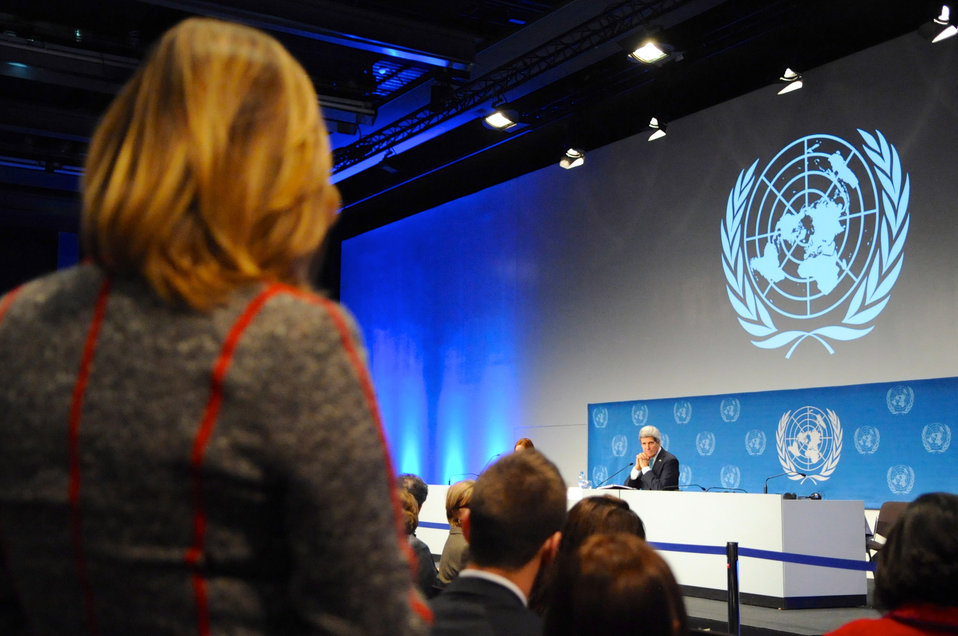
Secretary Kerry Answers Questions From a U.S. Journalist in Switzerland

U.S. Secretary of State John Kerry answers questions from CBS News State Department Correspondent Margaret Brennan at the end of the opening session of the Geneva II conference in Montreux, Switzerland, on January 22, 2014.